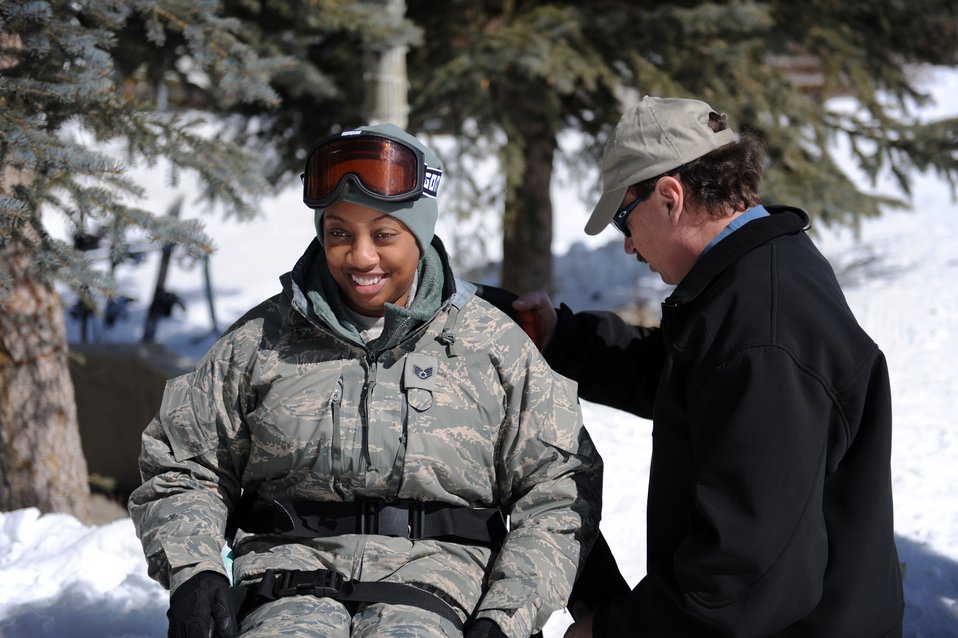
The power of the human spirit

Carl Desrosiers straps in Staff Sgt. Mareshah Haynes into a mono-ski March 28, 2010, outside the Silvertree Hotel in Snowmass Village, Colo. Sergeant Haynes is a print journalist assigned to the Defense Media Activity-San Antonio. Mr. Desrosiers is a ski instructor of 23 years covering the 24th National Disabled American Veterans Winter Sports Clinic. The event is sponsored by the Department of Veterans Affairs and Disabled American Veterans.